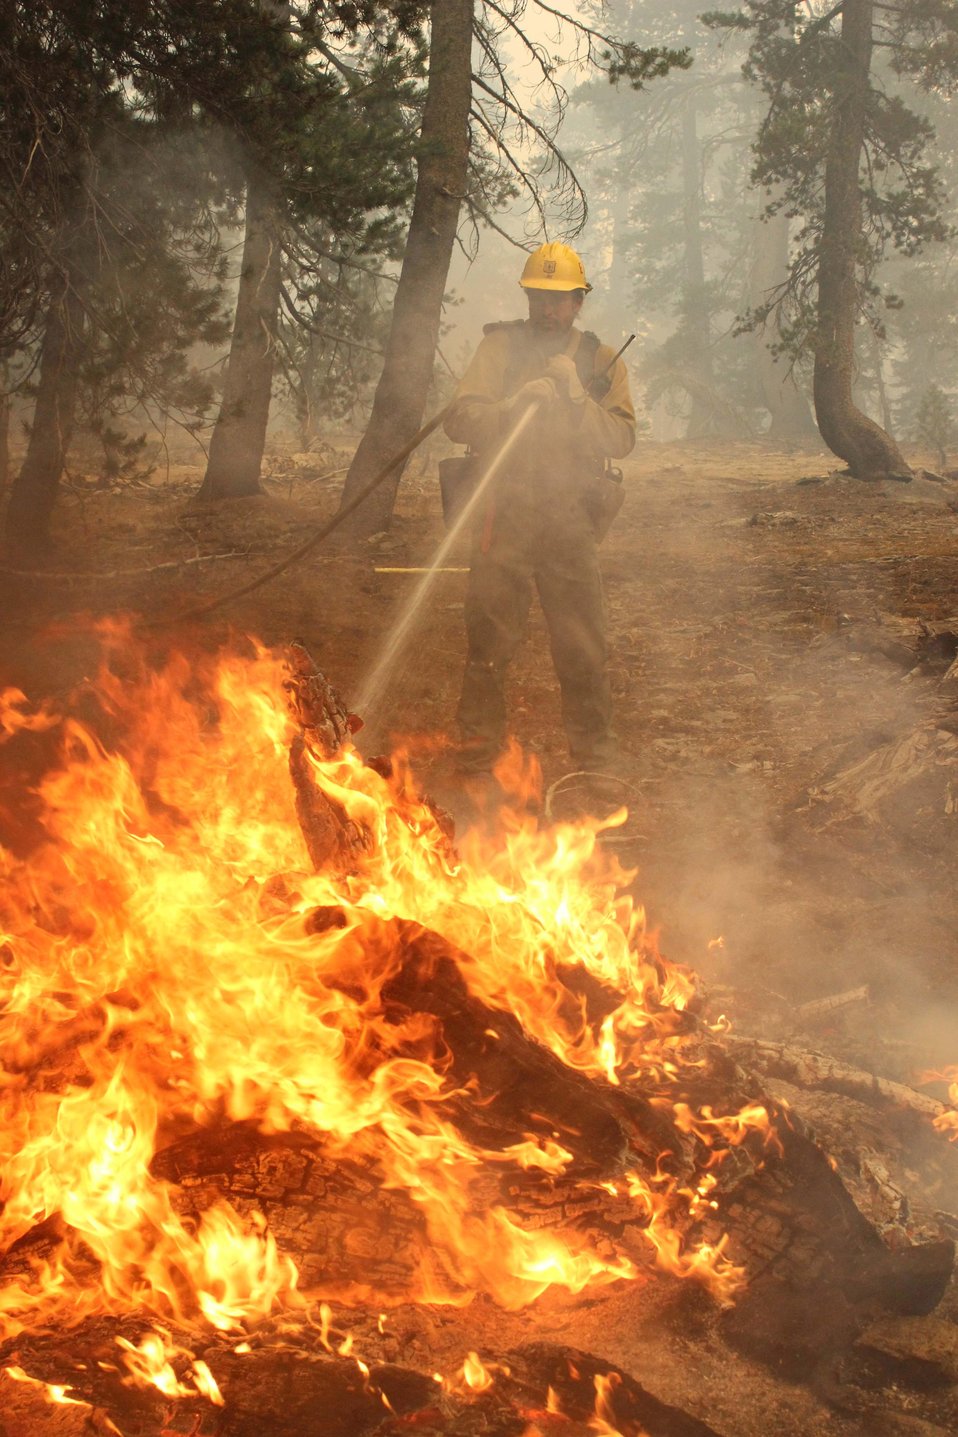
Firefighter sprays hotspot at the Rim Fire. The Rim Fire in the Stanislaus National Forest near in California began on Aug. 17, 2013 and is under investigation. The fire has consumed approximately 256,169 acres and is 84% contained.